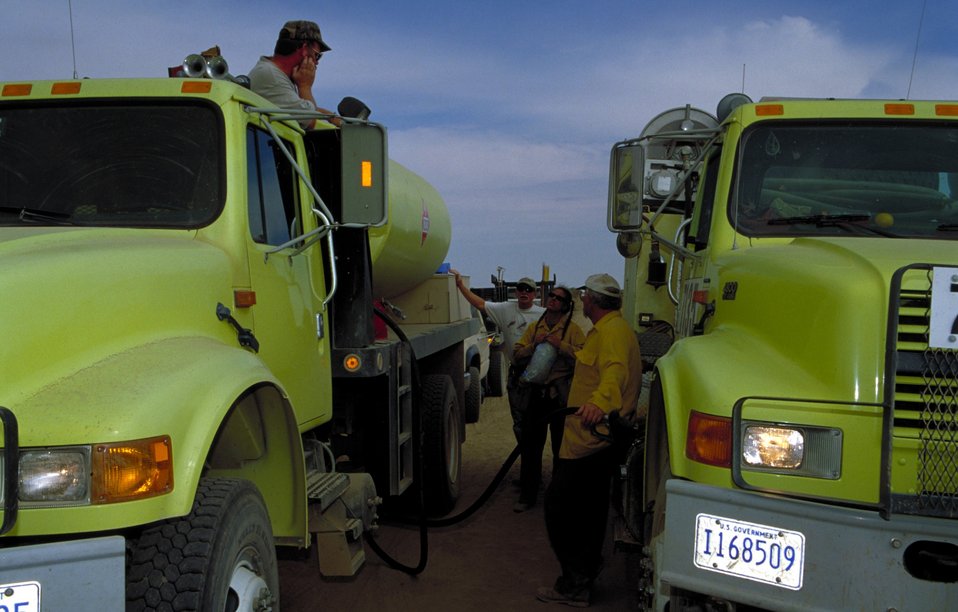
Fuel truck and heavy engine Fire Season 2000 Lower Snake River District LSRD